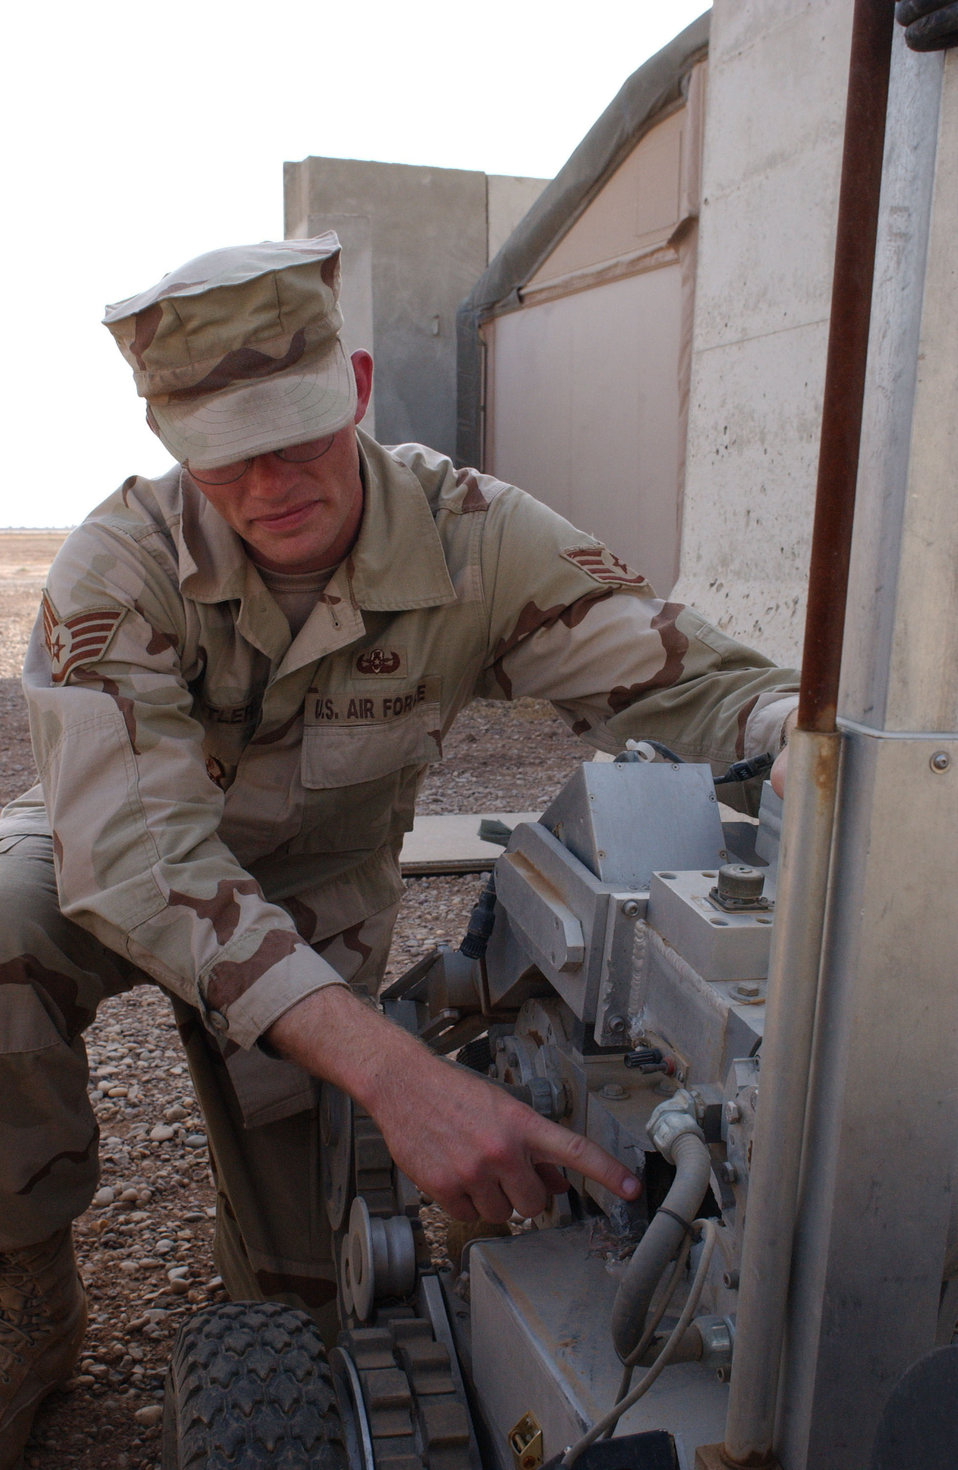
Robots, Airmen work together to defuse unexploded ordnance

BALAD AIR BASE, Iraq -- Staff Sgt. Robert Butler points out the damage an explosive can cause on an explosive ordnance disposal robot. He is a 332nd EOD technician here.